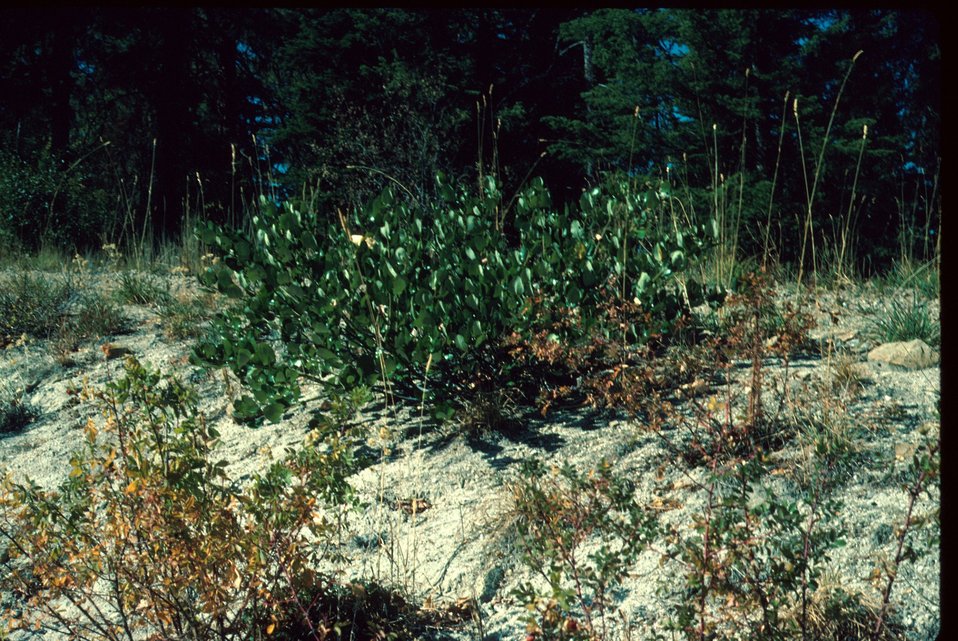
Ceanothus velutinous Buck Brush